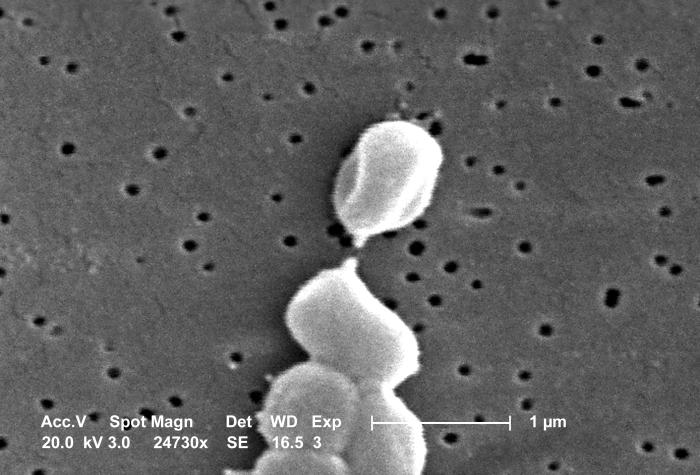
This SEM depicts a cluster of aerobic Gram-negative, non-motile Acinetobacter baumannii bacteria under a magnification of 24,730x.